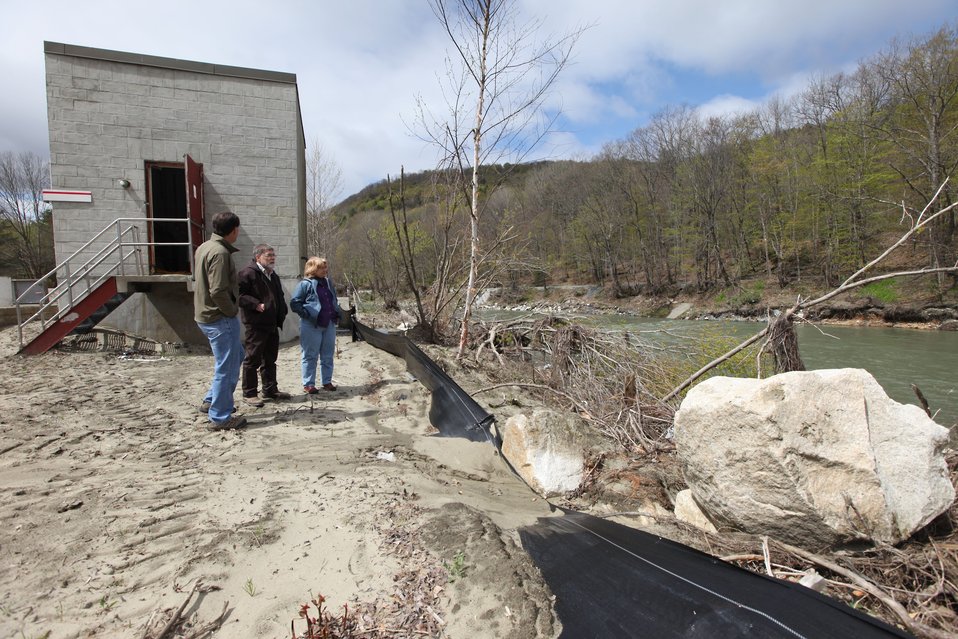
Director Dan Ashe views damage at the hatchery along the White River.

U.S. Fish & Wildlife Service Director Dan Ashe visits the Northeast Region
for a tour of the White River National Fish Hatchery in Bethel, Vermont on
April 27, 2012. The hatchery was devastated by Tropical Storm Irene and
Dan Ashe had the chance to meet and thank the staff for their heroic work.
Director Ashe also visited restoration/flood response/fish passage project
sites in Rochester, Vermont and met with local officials and staff from the
White River Partnership.